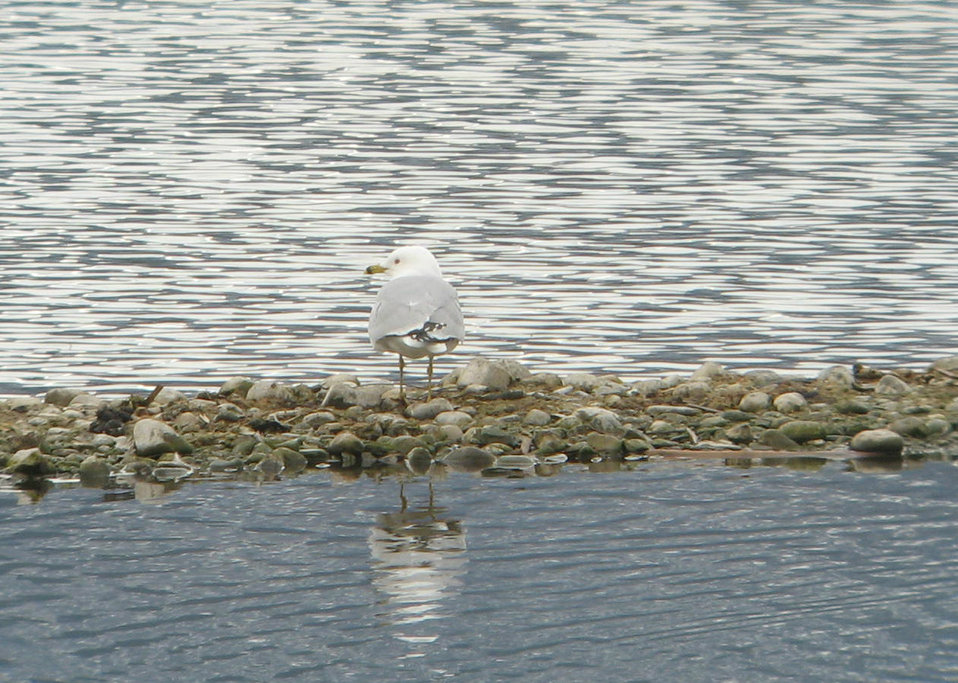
Ring-billed Gull

Larus delawarensis on Pond 6 of Lee Metcalf National Wildlife Refuge. This is the first sighting of 2013.